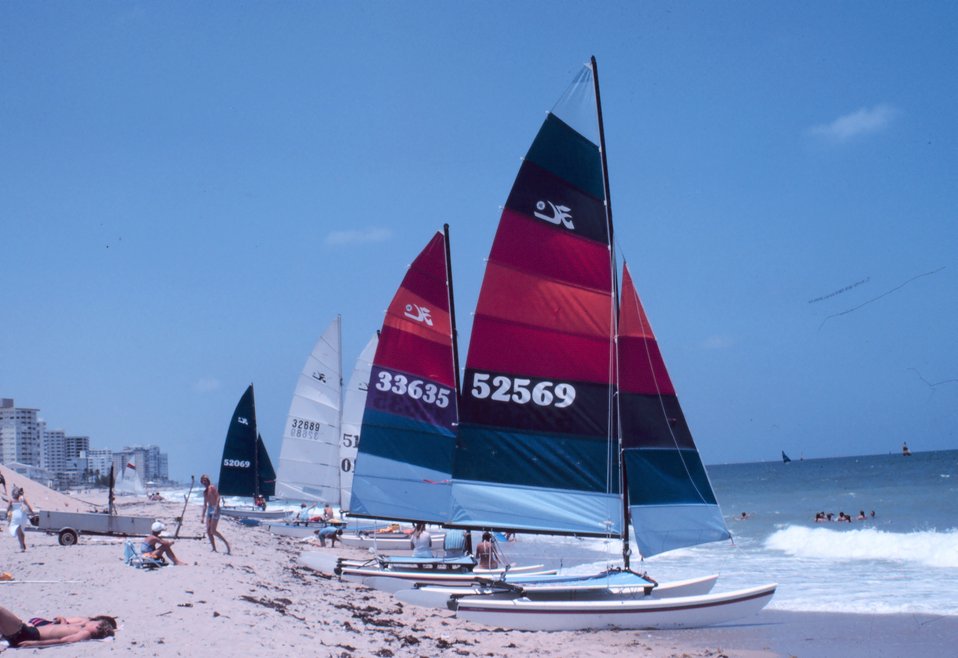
Hobie Cat regatta scene at Lauderdale by the Sea